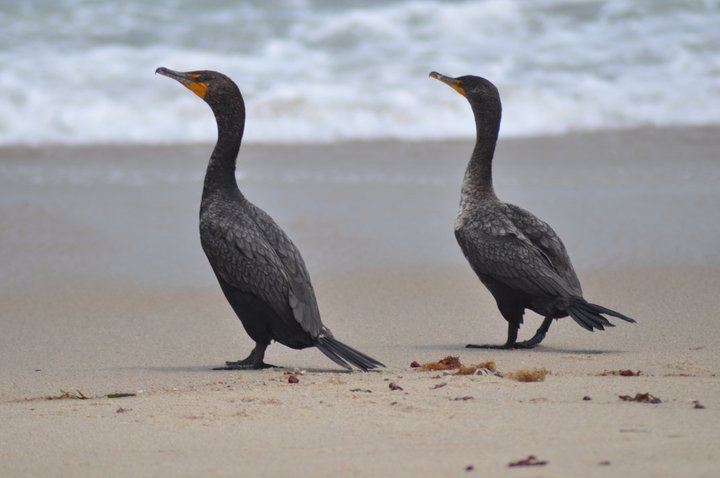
Double-Crested Cormorants

Two double-crested cormorants at the Nantucket National Wildlife Refuge, MA.